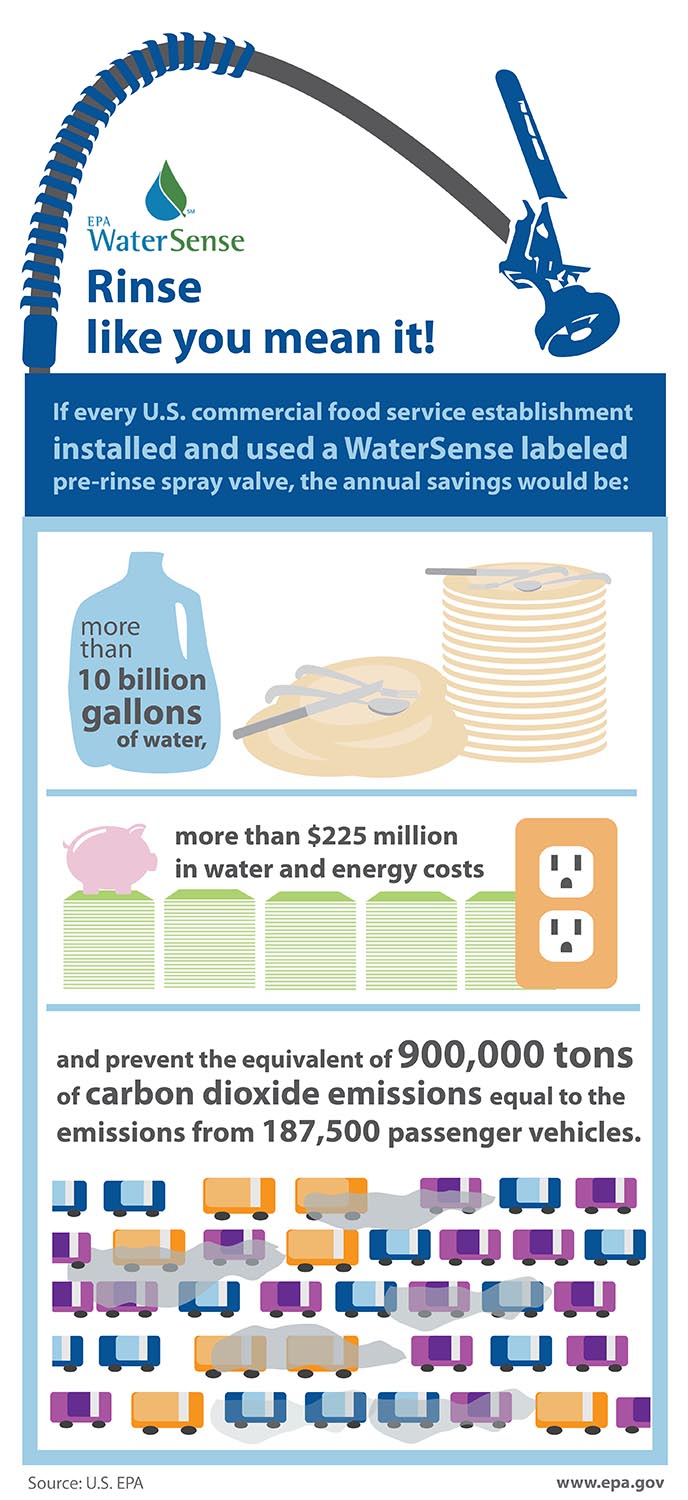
WaterSense: Rinse like you mean it!

An estimated 51 billion gallons of water are used every year to rinse dishes by food service establishments in the country. Outfitting a kitchen with WaterSense labeled pre-rinse spray valves will save energy and water.